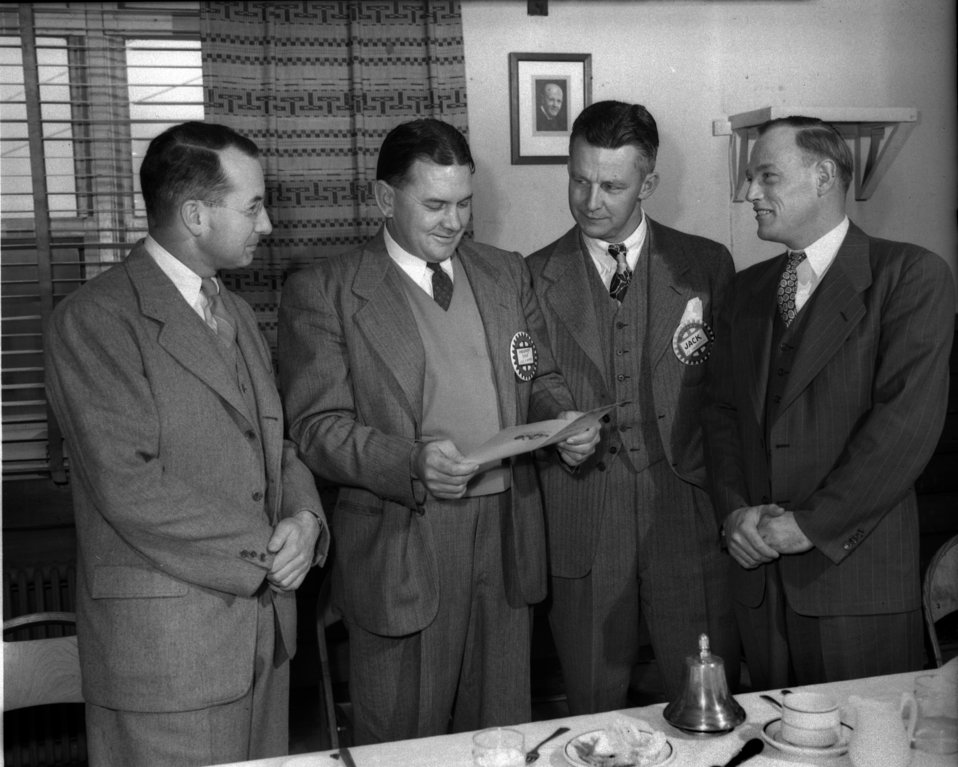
Rotary Club Meeting

4246-2a DOE photo Ed Westcott Oak Ridge Tennessee 1-15-1948